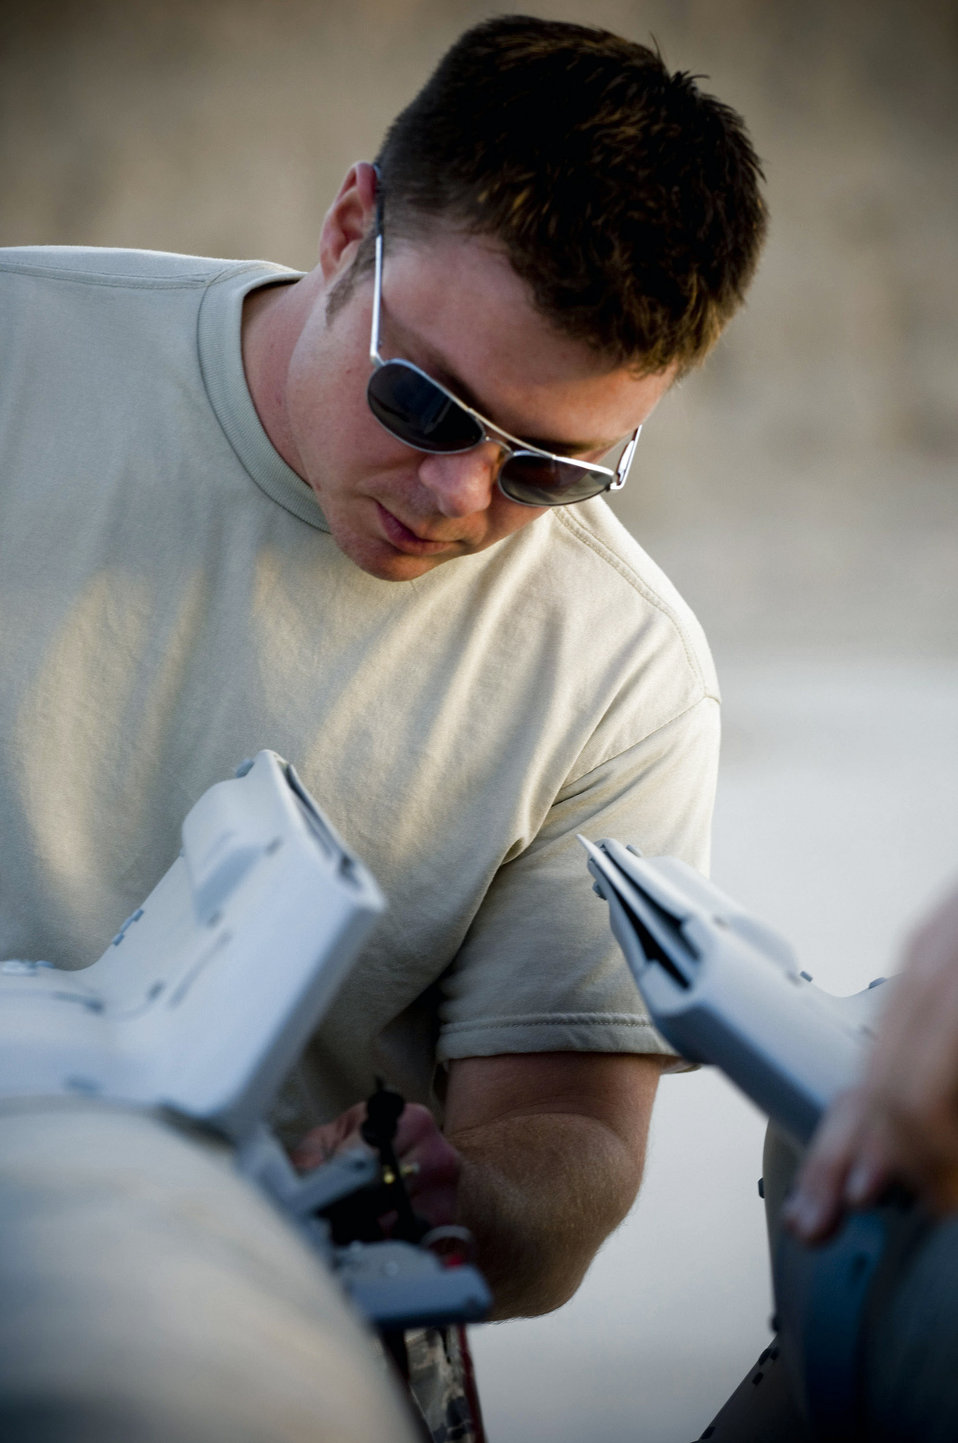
Kandahar team provides ammunition to win the fight

Staff Sgt. Aaron Ciccocioppo inspects a guided bomb unit-12 laser-guided bomb Oct. 27 at Kandahar Airfield, Afghanistan. Sergeant Ciccocioppo is assigned to the 451st Air Expeditionary Group Logistics Flight-Ammo and deployed from Langley Air Force Base, Va. He hails from Lancaster, Pa.